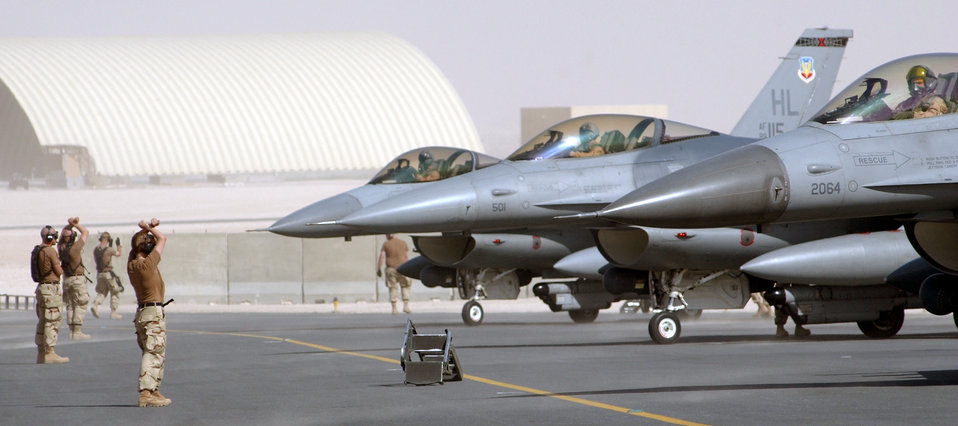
Falcons roost

OPERATION IRAQI FREEDOM -- Crew chiefs marshal F-16 Fighting Falcons toward parking spots at a forward-deployed location in Southwest Asia. Airmen and aircraft from Hill Air Force Base, Utah, are currently deployed supporting Operation Iraqi Freedom.